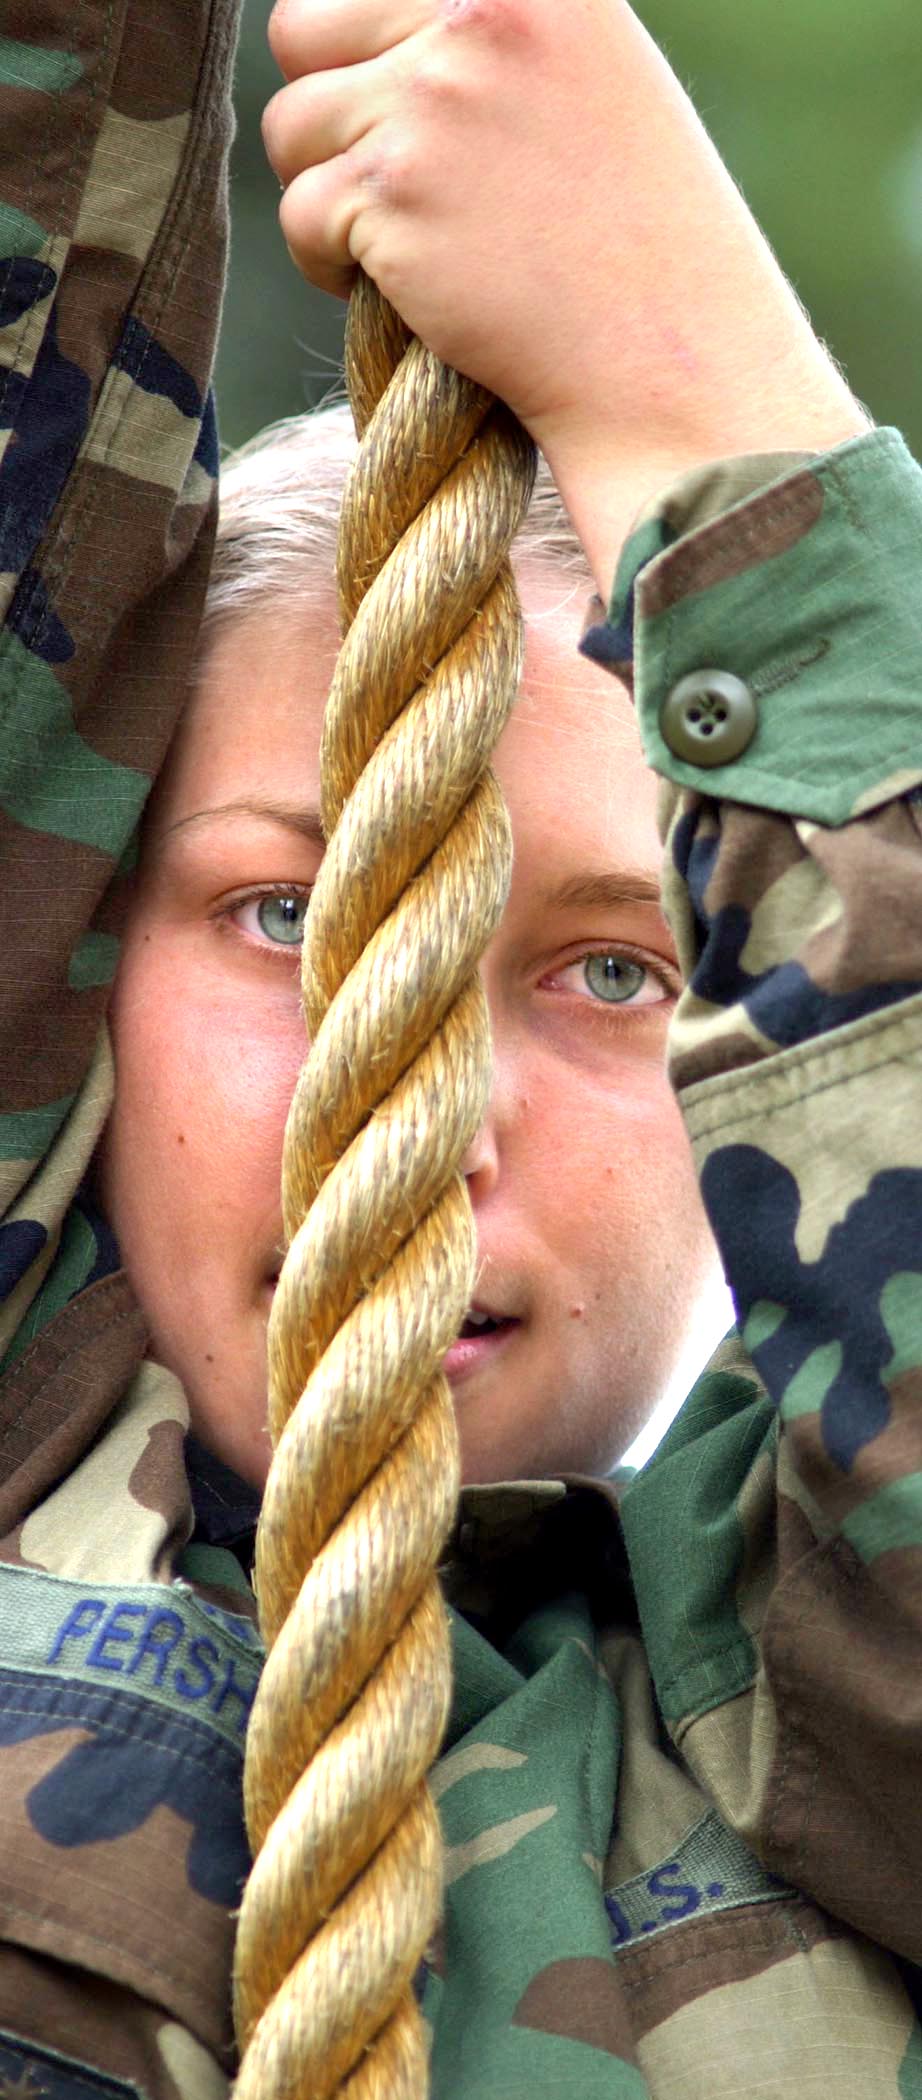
Basic cadets focus on next training obstacle

U.S. AIR FORCE ACADEMY, Colo. -- Basic Cadet Beth Pershing pulls herself up the rope on the confidence course in Jacks Valley.